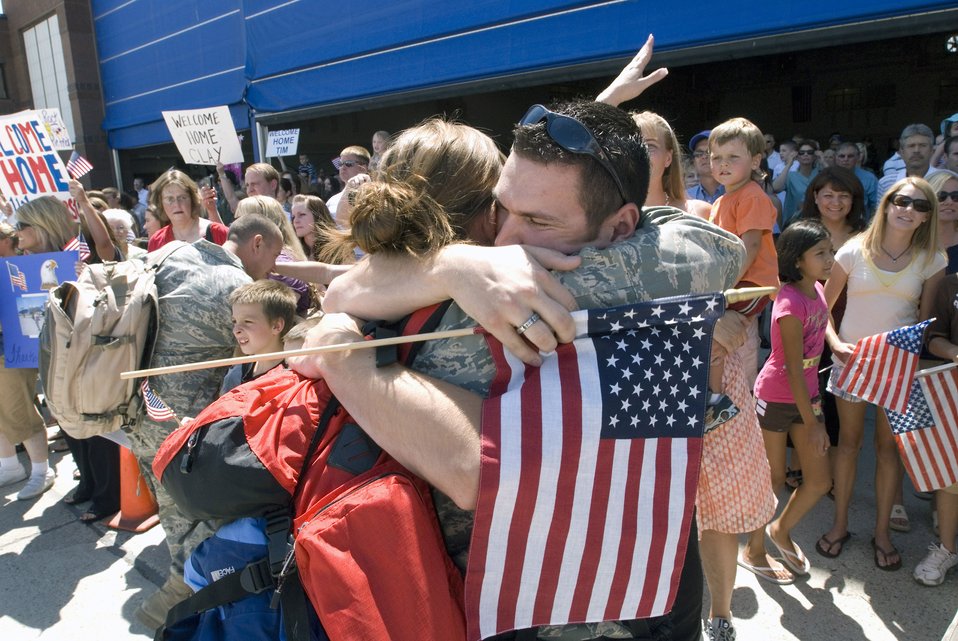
You're home!

Welcoming the return of the Idaho Air National Guard's 124th Wing from deployment, Airman 1st Class Wesley Krenning hugs his sister Airman 1st Class Melissa Krenning Aug. 7 at Gowen Field, Idaho.